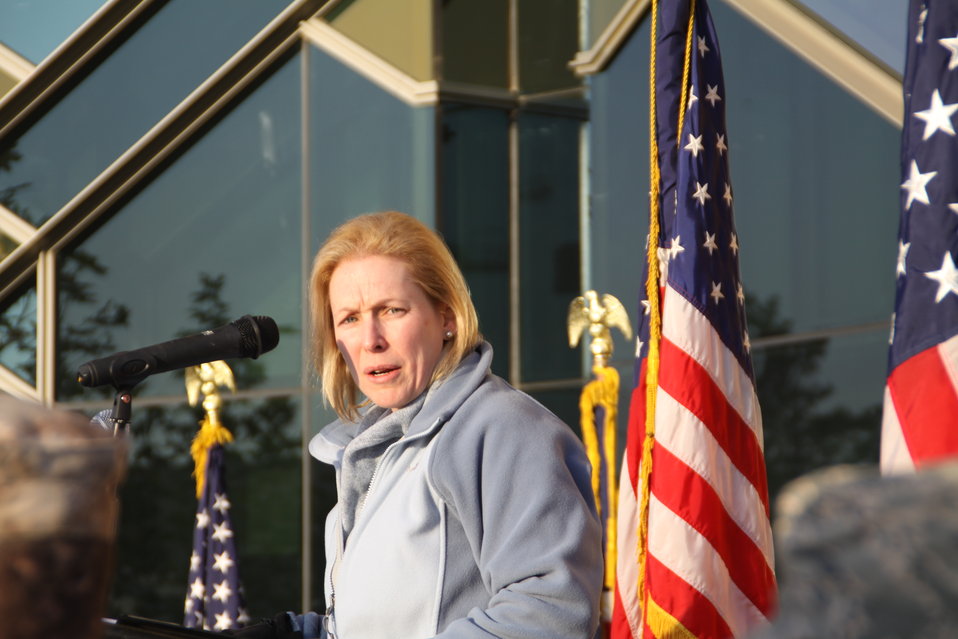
Senator Gillibrand